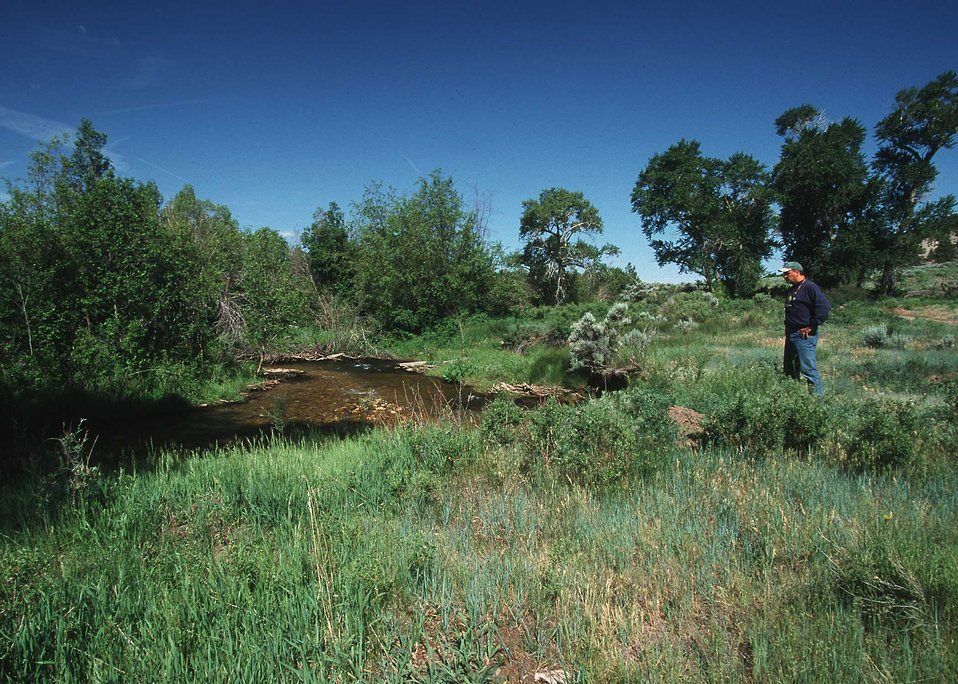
Sangre de Cristo Creek, FT Ranch.